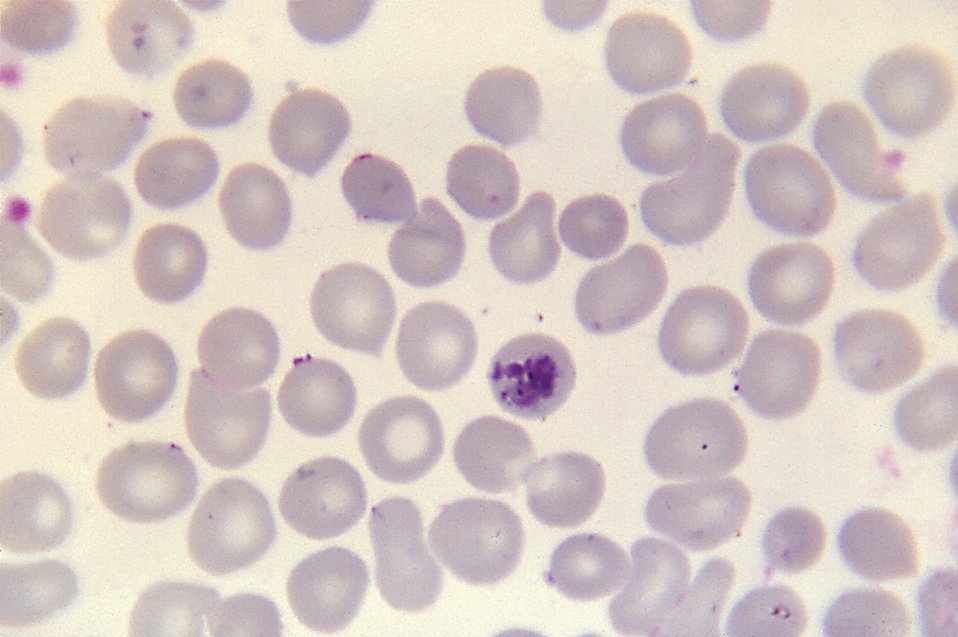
Debris on this red blood cell (Cntr) produced an artifact that resembled a malaria parasite, using Giemsa stain; Mag. 1150X.